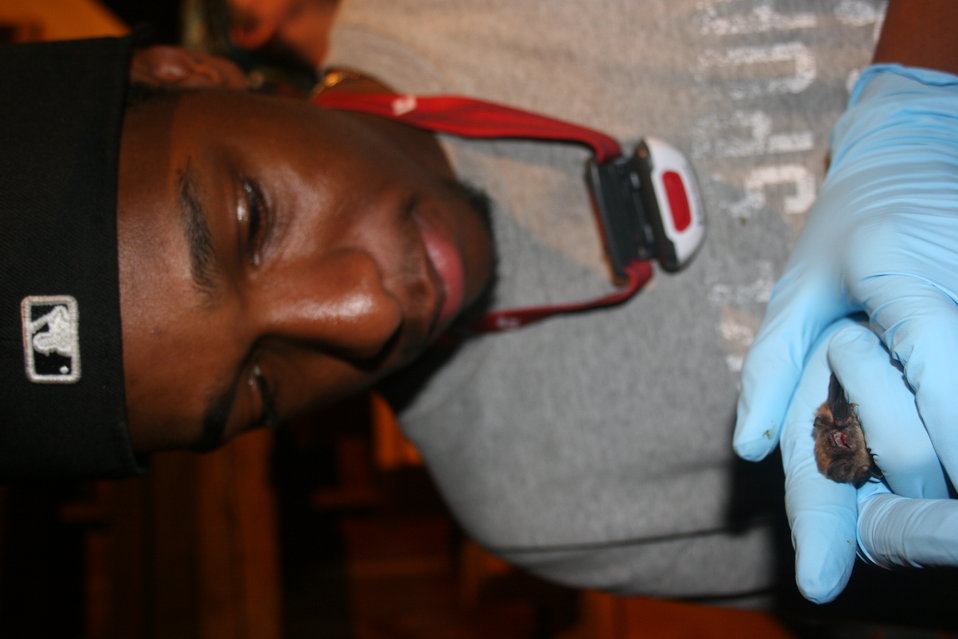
BU technician with bat

Boston University technician Leon Spencer holds recently banded bat.